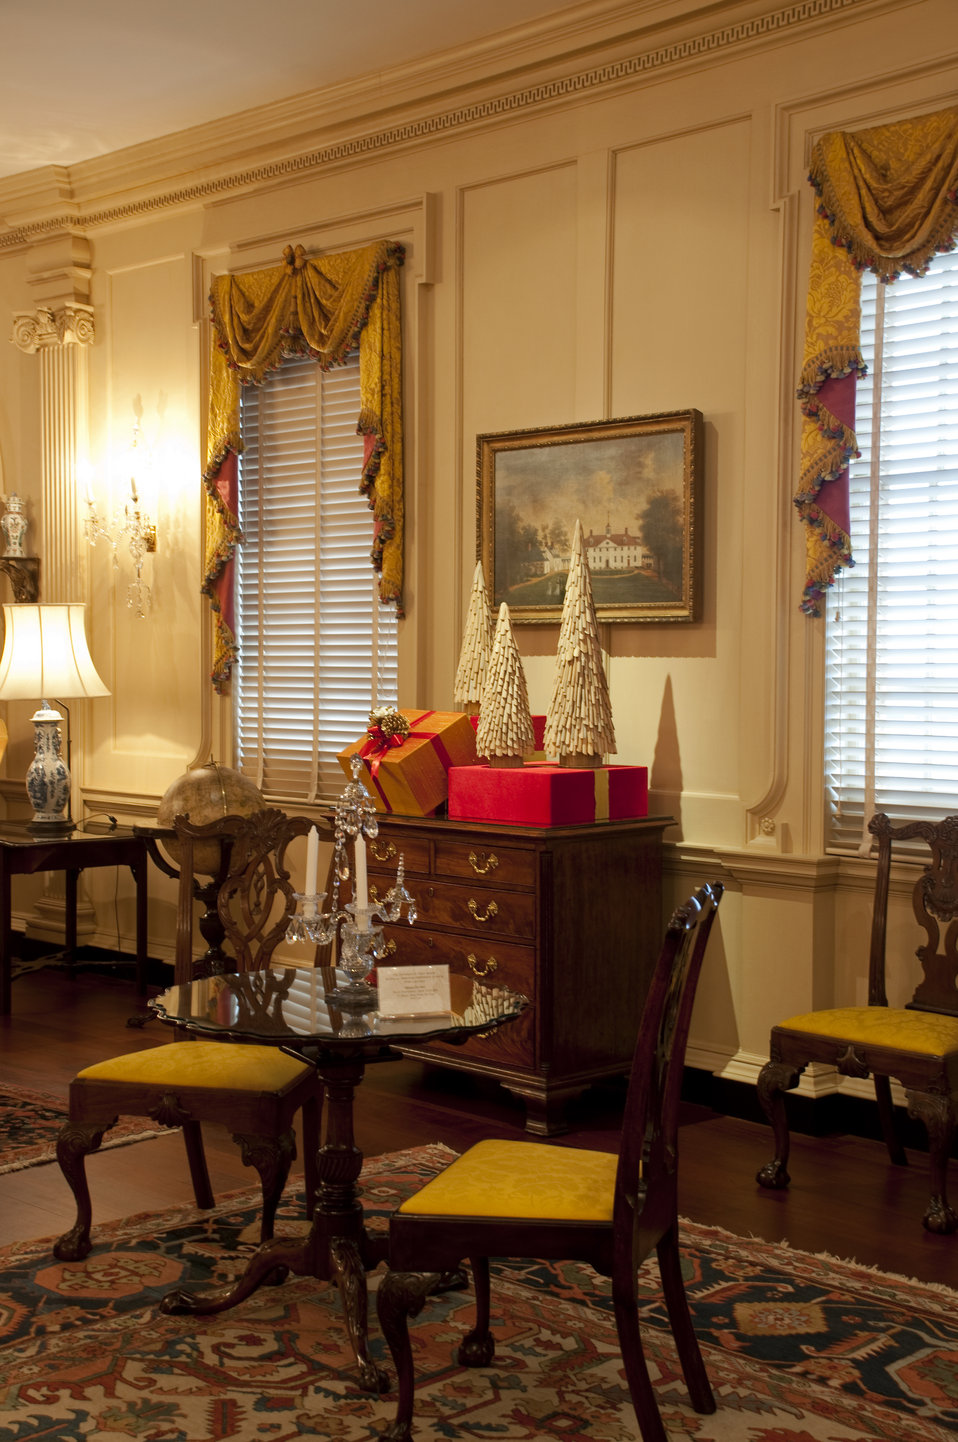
The U.S. Department of State Partners With Time Inc. and InStyle To Decorate the John Quincy Adams State Drawing Room

The U.S. Department of State partners with Time Inc. and InStyle to decorate the Diplomatic Reception Rooms for the Holidays in December 2010. Pictured in this photo is the John Quincy Adams State Drawing Room.